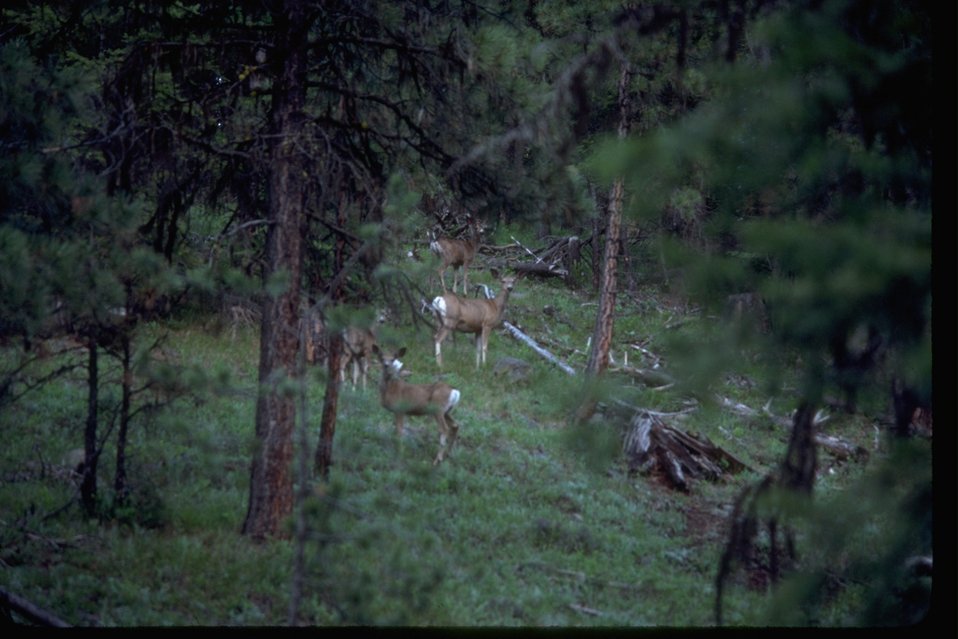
Deer in forest setting.